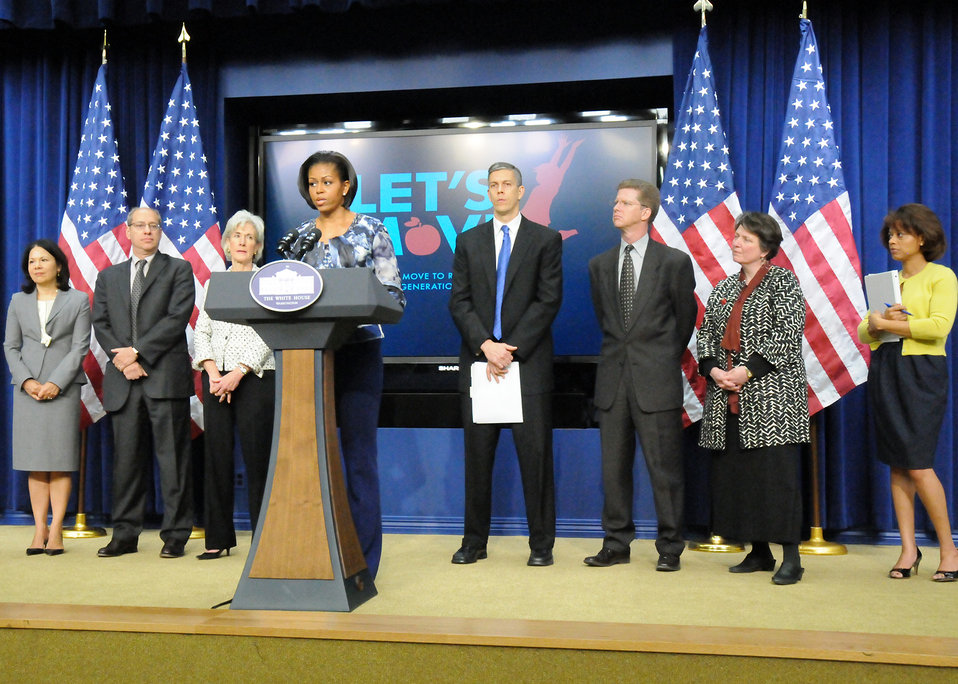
First Lady Michelle Obama and the Childhood Obesity Task Force announced its action plan, “Solving the Problem of Childhood Obesity Within a Generation,' during a press conference at the Eisenhower Executive Office Building in Washington, D. C., on Tuesday, May 6, 2010. (L to R Office of Health Reform Director Nancy-Ann DeParle, Federal Trade Commission Chairman Jon Leibowitz, Health and Human Services Secretary Kathleen Sebelius, Education Secretary Arne Duncan, Housing and Urban Development Secretary Shaun Donovan, Agriculture Deputy Secretary Kathleen Merrigan, and Domestic Policy Council Director Melody Barnes) USDA photo 10di1354- 42